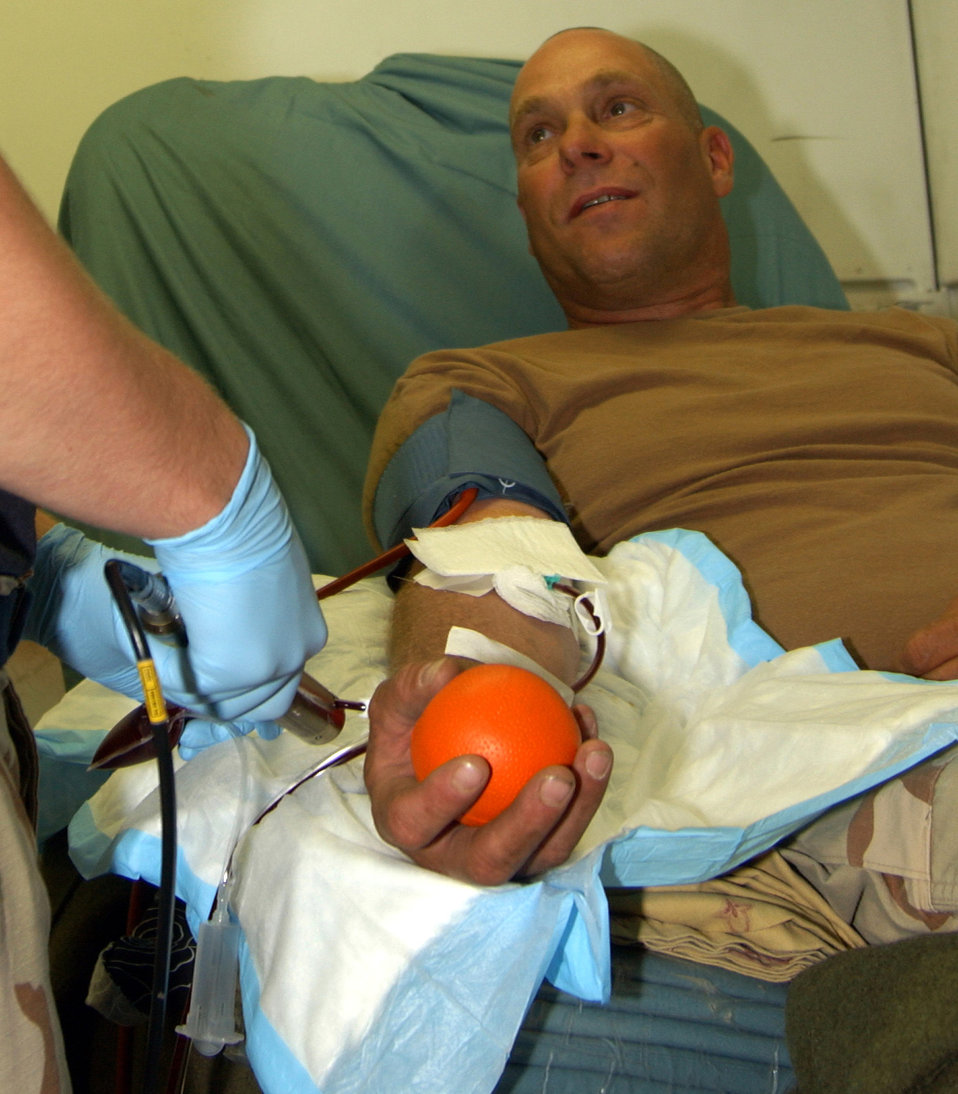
Aversion to needles doesn't stop donor

Staff Sgt. Bret Departu donates his eighth unit of platelets at Balad Air Base, Iraq. He is an Air National Guardsman with the 332nd Expeditionary Security Forces Squadron.